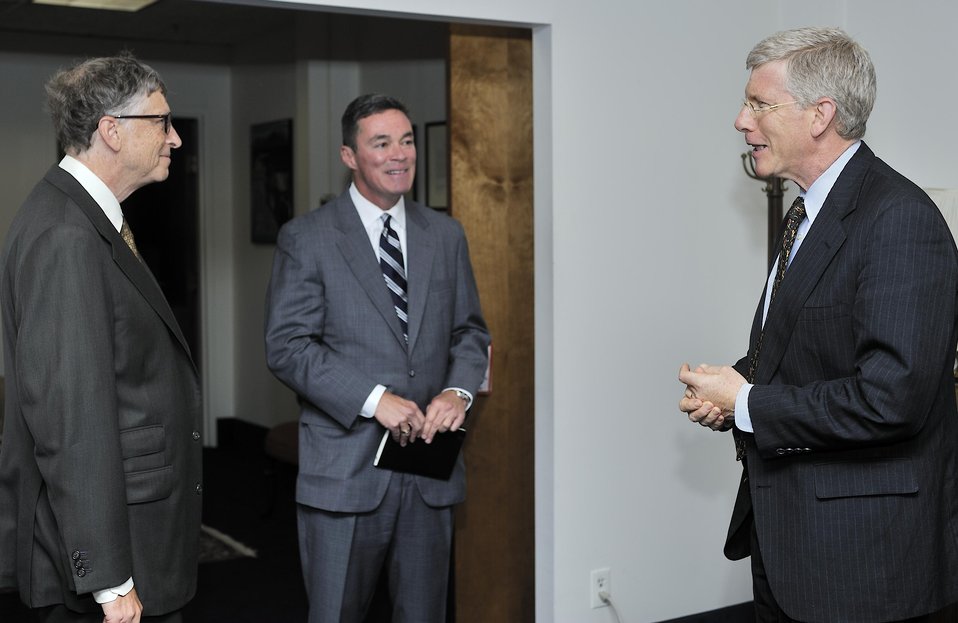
Ken Shipp/DOE Photo